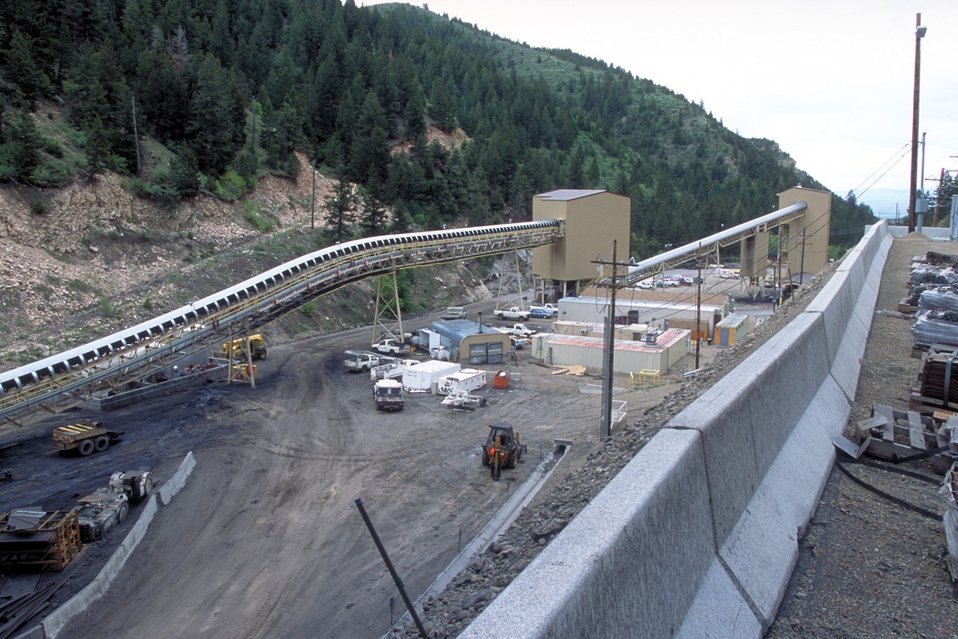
Coal production near Price, Utah.